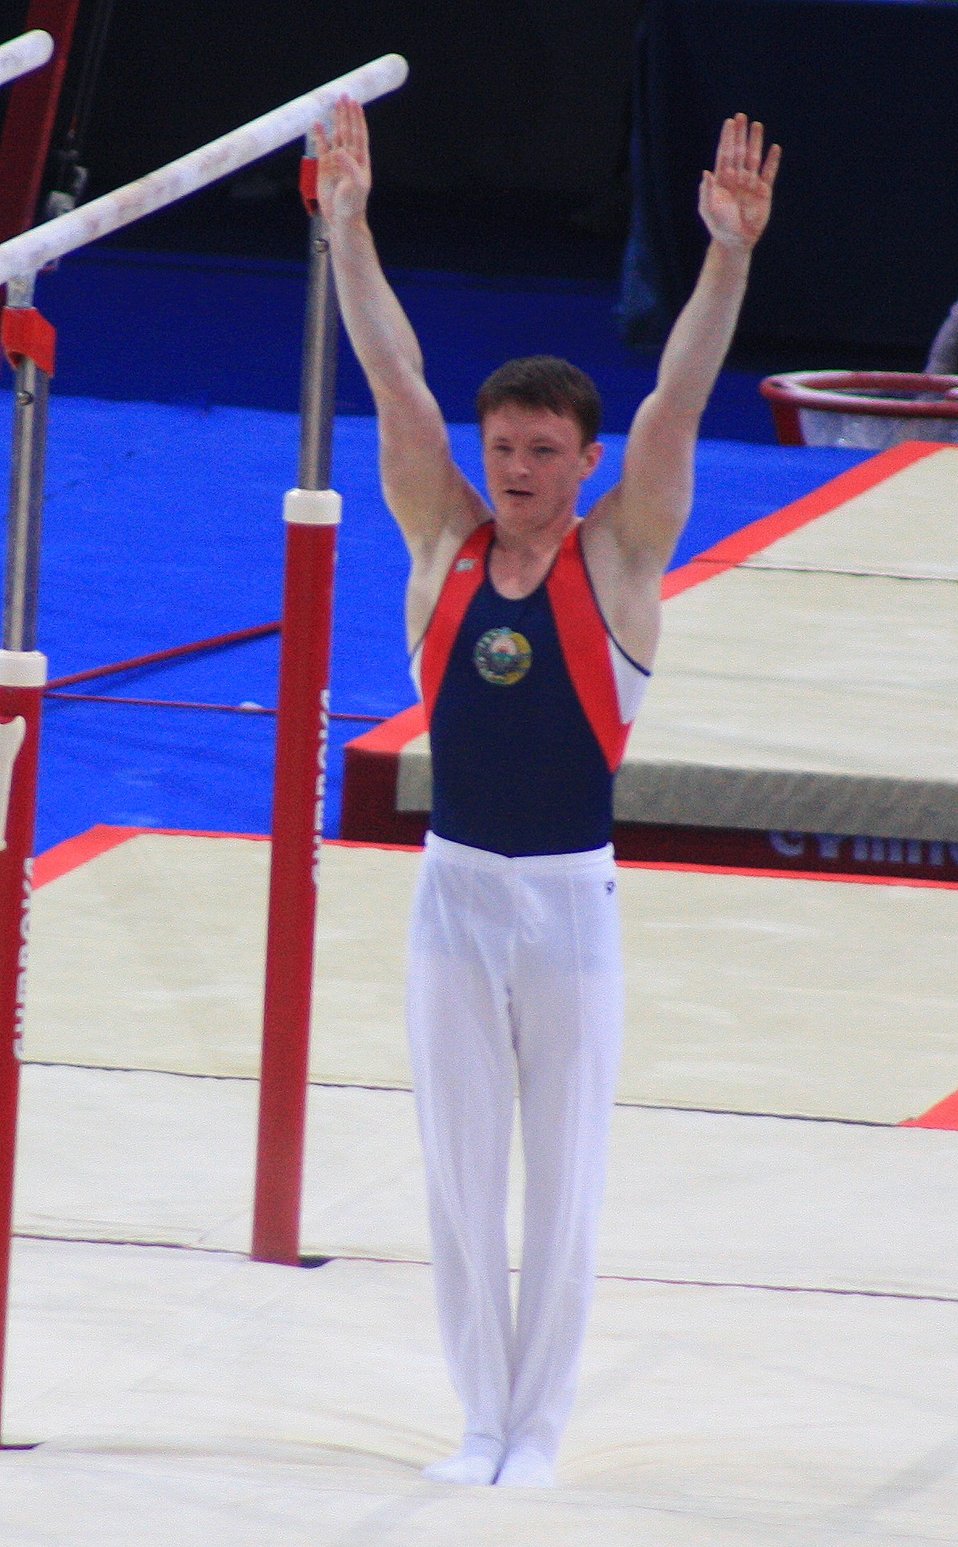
Fran√ßais†: Anton Fokin √† la r√©ception de son mouvement en finale des barres parall√®les des 17e Internationaux de France en 2010.